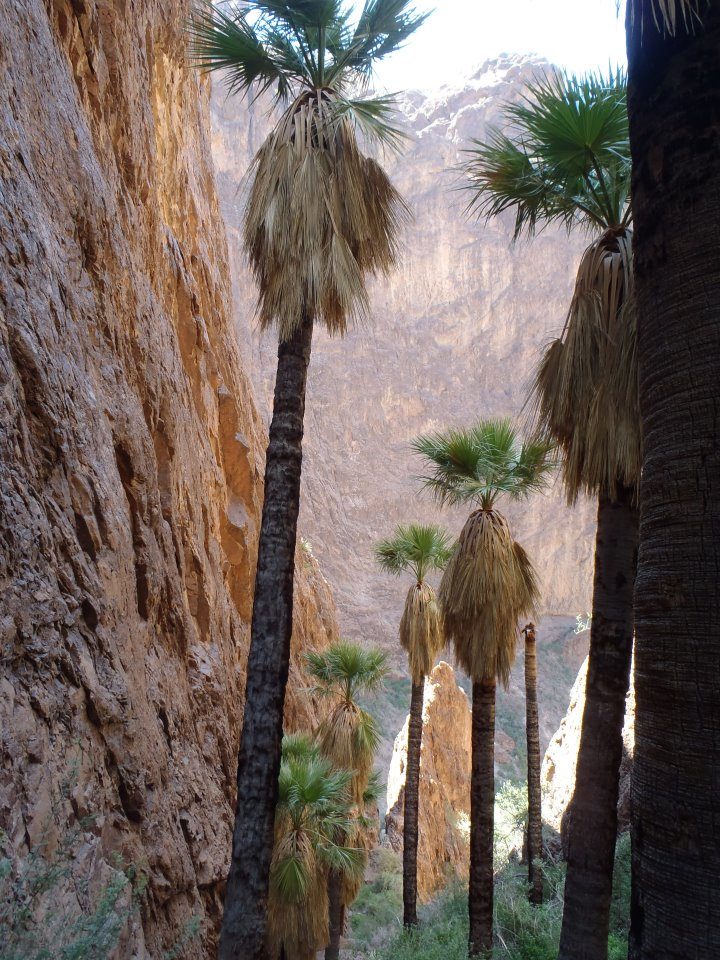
Kofa NWR Kelly Lockman USFWS

Arizona's Kofa National Wildlife Refuge is a haven for rare desert wildlife and plants.